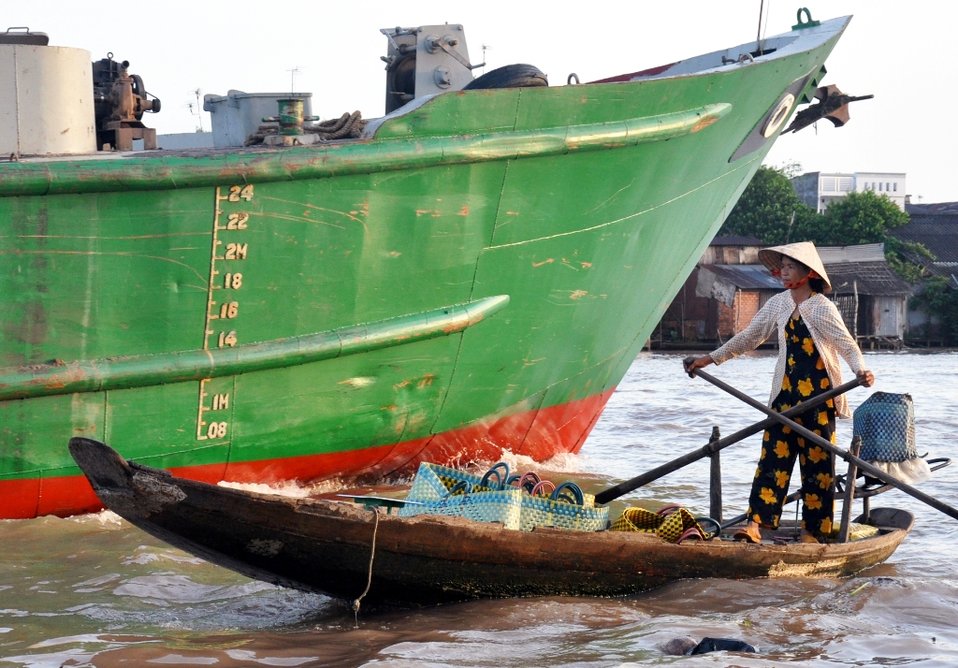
Floating Market in Can Tho, Vietnam

Vessels of all sizes ply the waters near Can Tho in Vietnam's Mekong Delta.